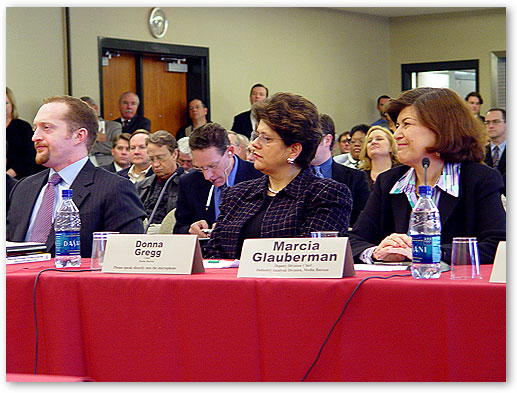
FCC General Counsel Sam Feder, Media Bureau Chief Donna Gregg, Media Bureau Industry Analysis Deputy Division Chief, Ms. Marcia Glauberman.